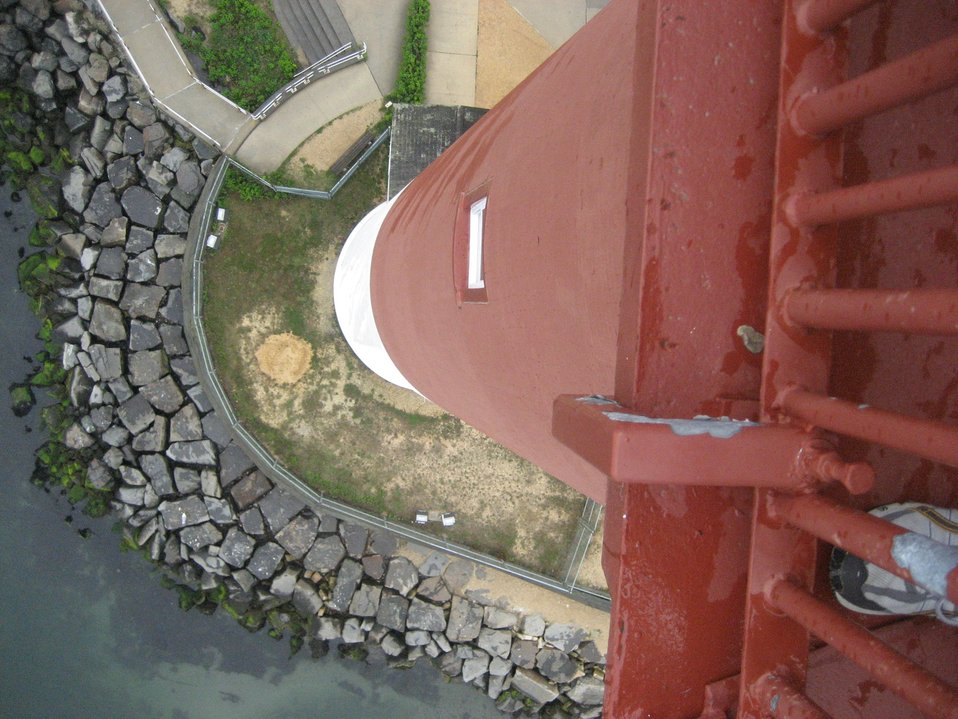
Looking down from Barnegat Lighthouse.